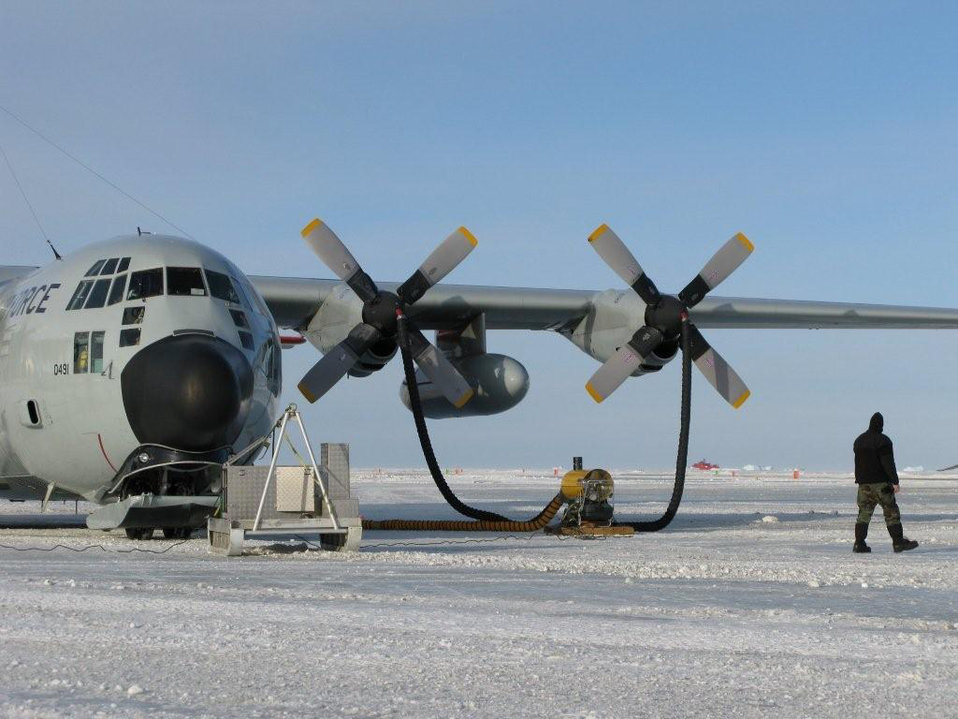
Operation Deep Freeze

An LC-130 Hercules sits on an improvised ice runway Nov. 3 at Davis Station, Antarctica. A U.S. and Australian medical team moved an injured Australian civilian aboard the aircraft from the camp to a hospital in Hobart, Australia, Nov. 5.